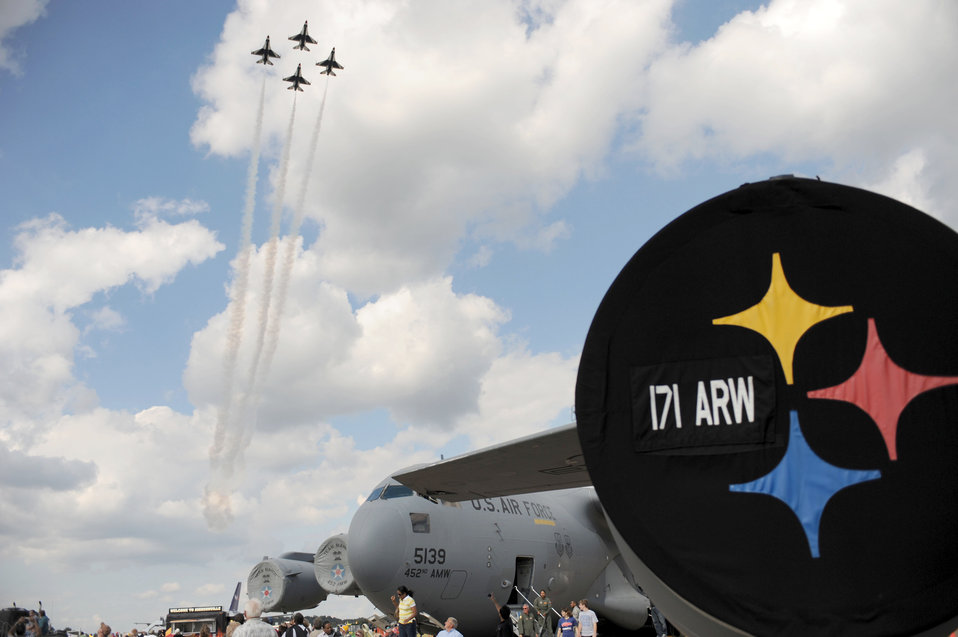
Showing Pittsburgh spirit

The U.S. Air Force Air Demonstration Squadron Thunderbirds fly the diamond formation over Pittsburgh International Airport Air Reserve Station, Sept. 12, 2010, during the Wings Over Pittsburgh Air Show.